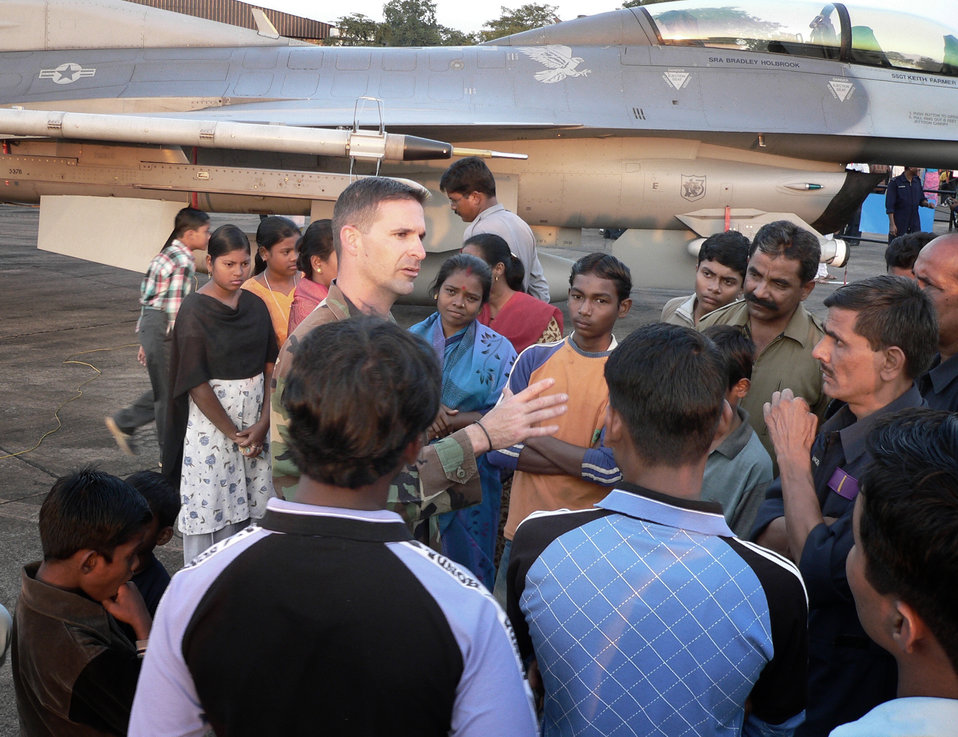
Cope India

KALAIKUNDA AIR STATION, India (AFPN) -- Master Sgt. Dave Miller talks with local people who gathered to see displays of U.S. and Indian Air Force aircraft. Sergeant Miller is one of about 250 U.S. Airmen participating in the Cope India exercise. He is an aircraft section chief from Misawa Air Base, Japan.